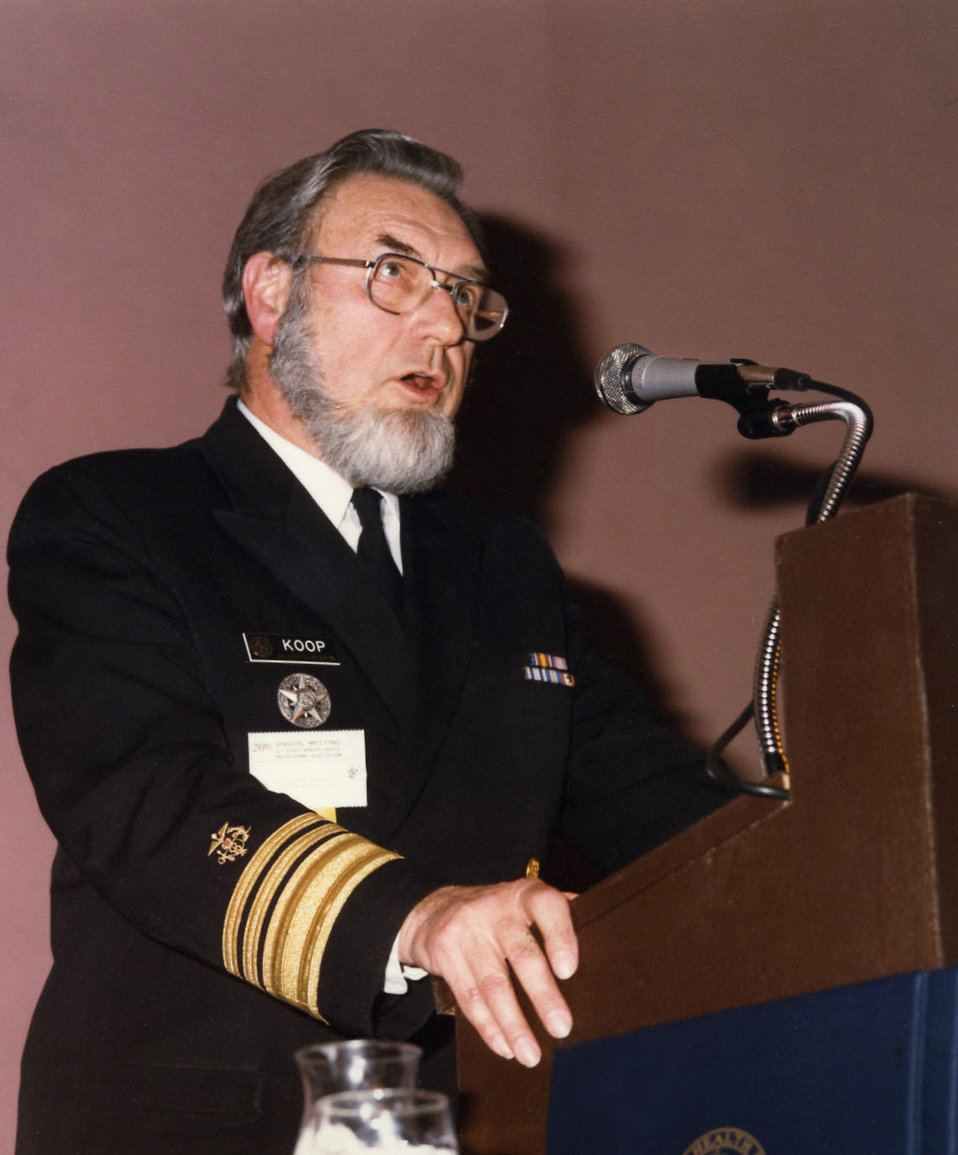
Here, former Surgeon General Dr. C. Everett Koop was shown addressing Centers for Disease Control employees during a 1980s presentation.